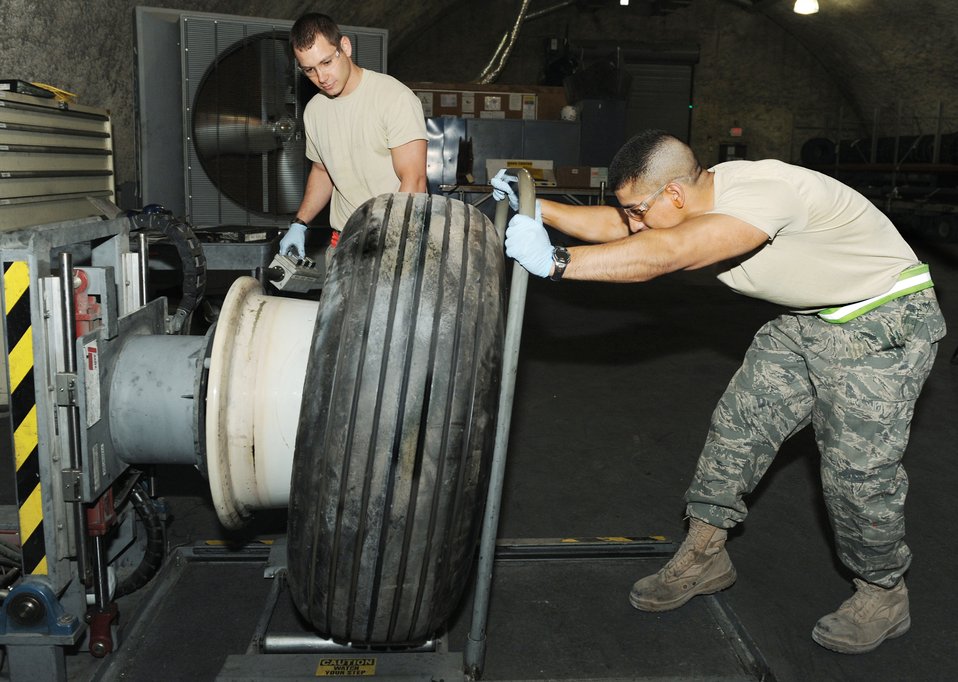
One more push!

Staff Sgt. Juan Hernandez (right) and Senior Airman Nick Bentler build-up and overhaul an E-8C J-STARS aircraft wheel and tire assembly March 16, 2010 at an air base in Southwest Asia. The Airmen are assigned to the 379th Expeditionary Maintenance Squadron.